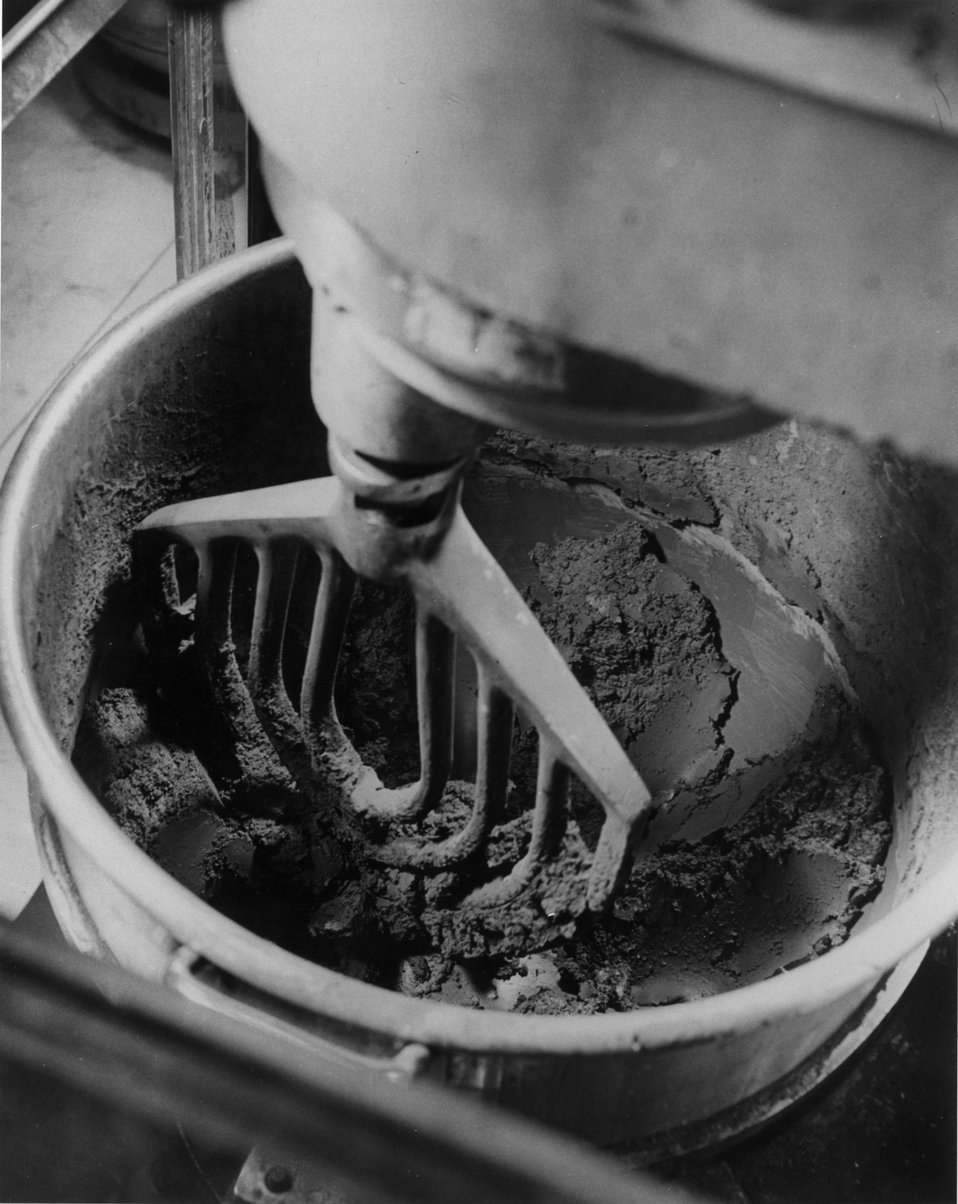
Close-up view of one of the principal steps in the fabrication of fuel elements for water cooled reactors. c. 1964